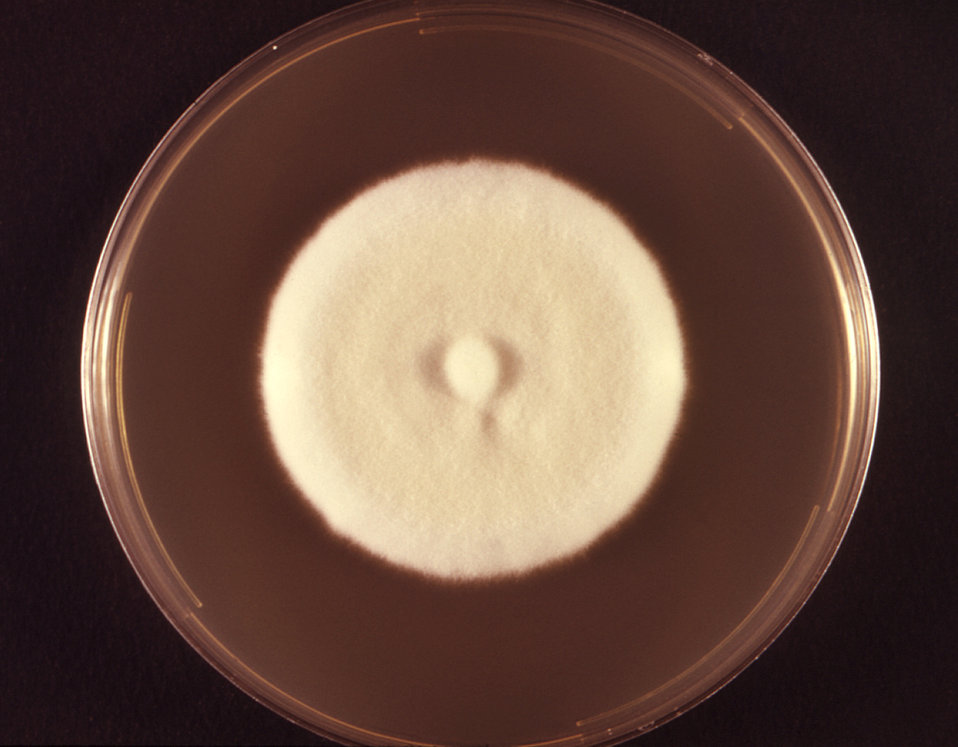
Photographed from the front, this image depicted a Petri dish containing cereal agar, upon which a Microsporum persicolor fungal colony had been cultured. As was the case here, the colonies can be white, or depending upon the Microsporum sp., may run the gamut, sporting a yellow, beige or cinnamon color, and display a flat, or glabrous, woolly or powdery texture. Taxonomically, M. persicolor is a member of the phylum Ascomycota. See PHIL 10903 for a reverse view of this colony, i.e., viewed from behind.